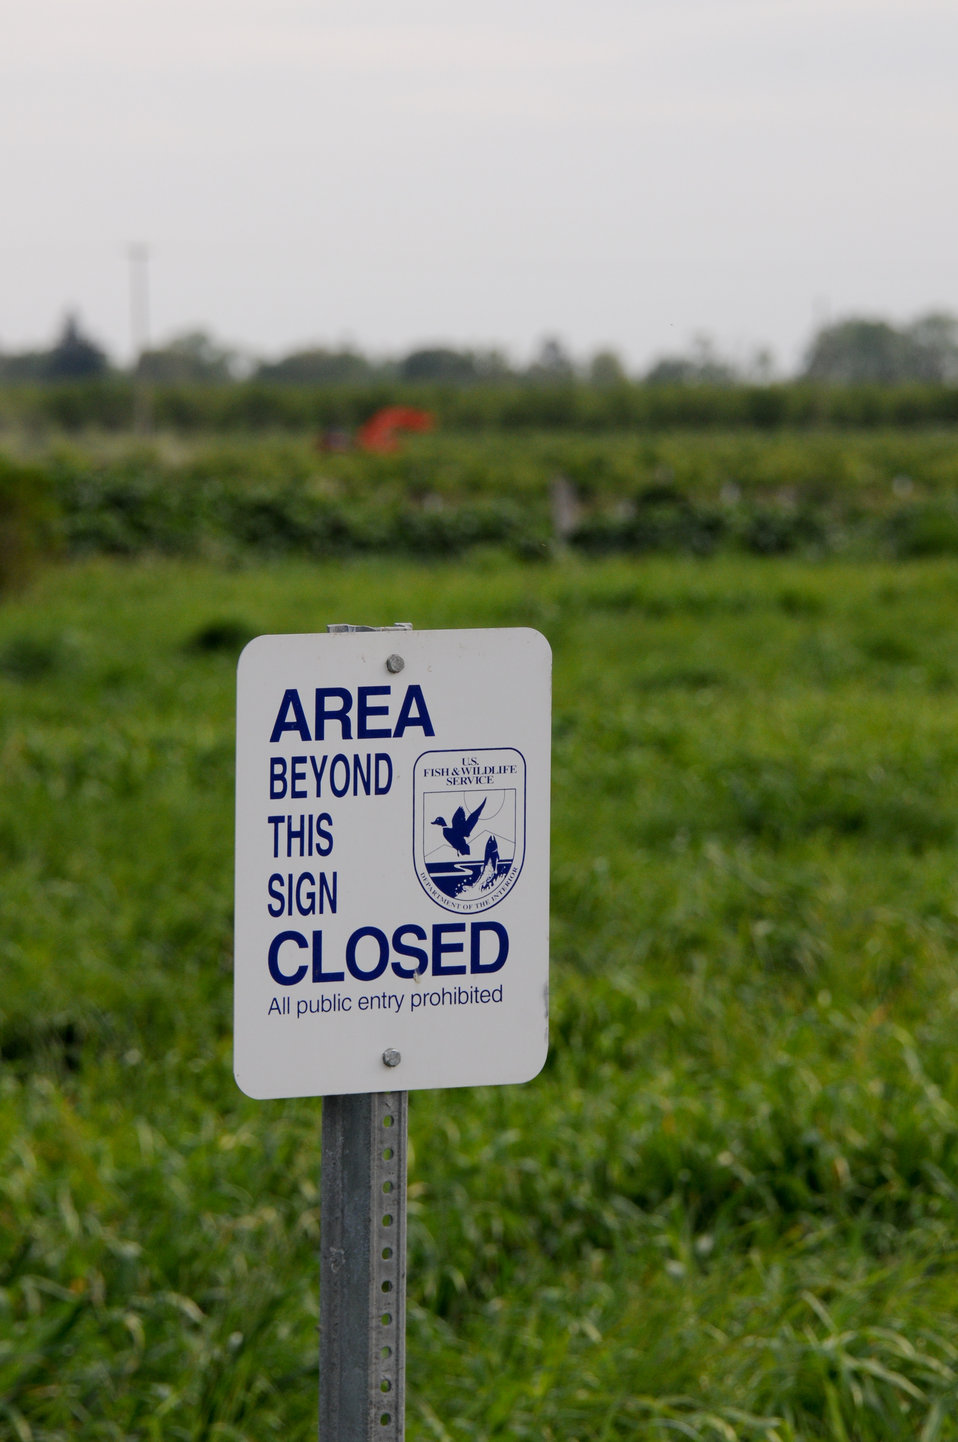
Public-restricted wetlands

A U.S. Fish & Wildlife Service sign guards public-restricted wetlands between the Sacramento River and private orchards in Hamilton City, Calif., April 14, 2011. The new setback levees will pass directly between these wetlands and the orchards.